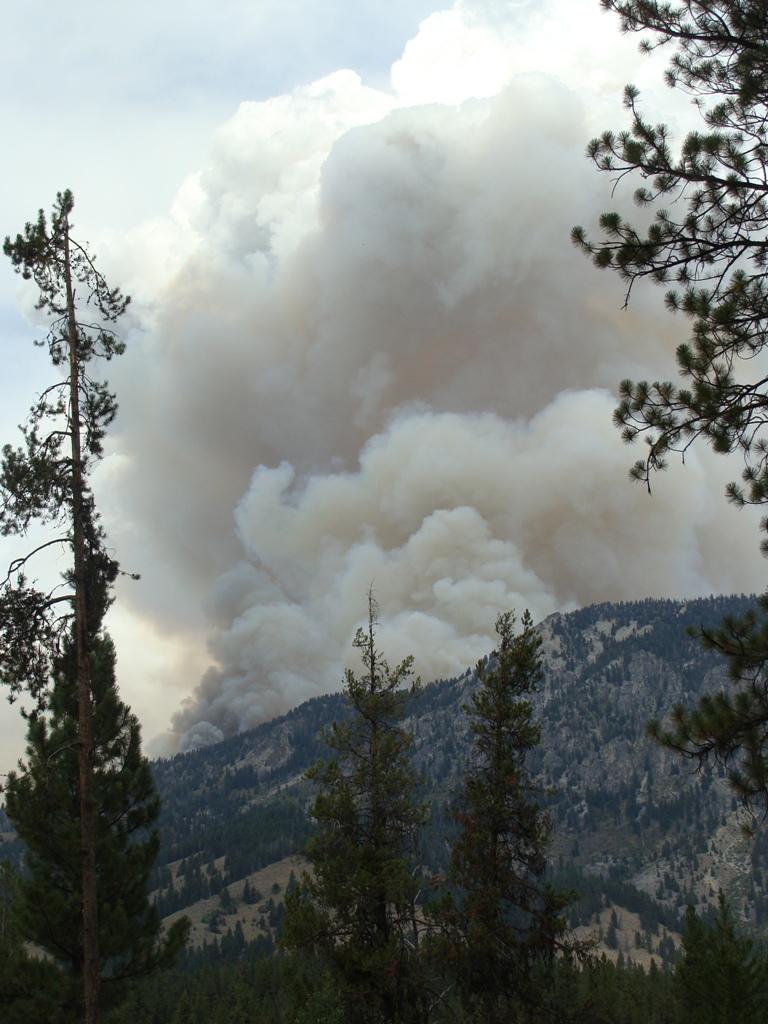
The Little Queens Fire in Boise National Forest near Atlanta, ID began on Aug. 17, 2013 is under investigation. The fire has consumed approximately 20,956 acres and is 10% contained.